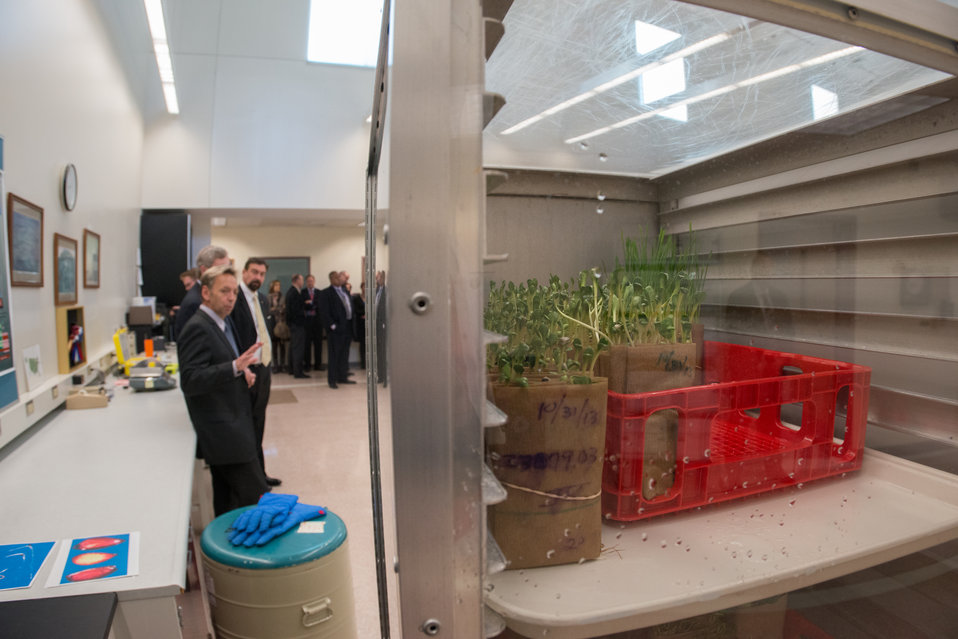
U.S. Department of Agriculture (USDA) Secretary Tom Vilsack, second from foreground, looks at the Agriculture Research Service (ARS), National Center for Genetic Resources Preservation (NCGRP), Plant and Animal Genetic Resources Preservation Research Unit germination bay, as Research Leader Geneticist Dr. David Dierig, left, talks about the seeds, on the tray in a cabinet, that have been germinated in moist paper towels, and are ready for seed quality evaluations, in Ft. Collins, CO, on Wednesday, Nov. 6, 2013.